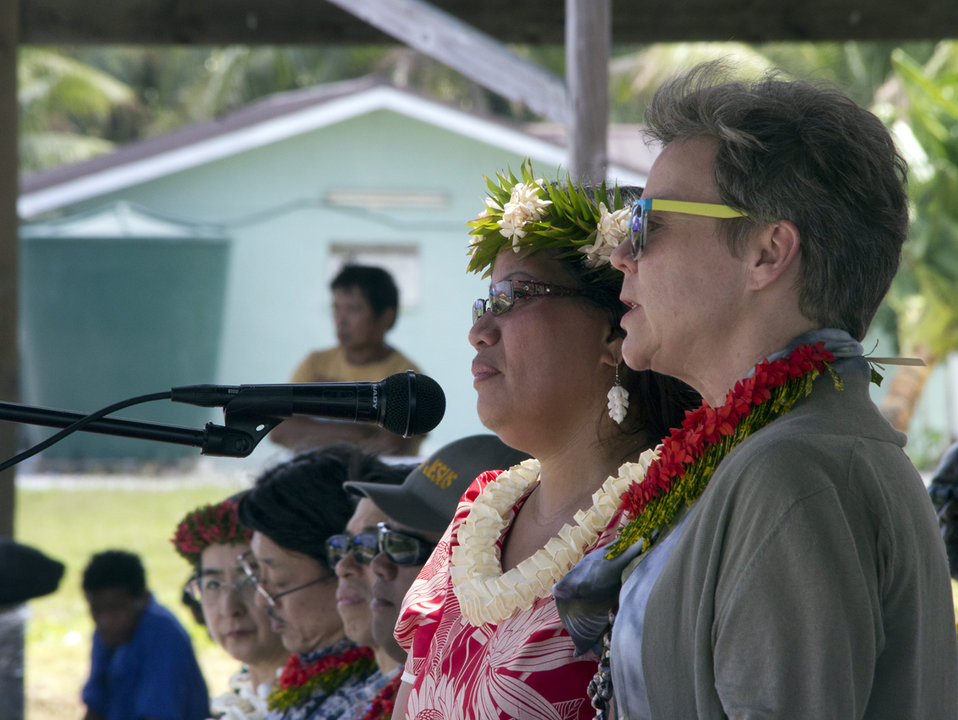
Under Secretary Gottemoeller Delivers Remarks at the Kili Island Remembrance Day Commemoration

Under Secretary of State for Arms Control and International Security Rose Gottemoeller delivers remarks at the Kili Island Remembrance Day commemoration, marking 60 years since the 'Bravo Shot' nuclear test on Bikini, the former homeland of those living on Kili, on March 3, 2014.